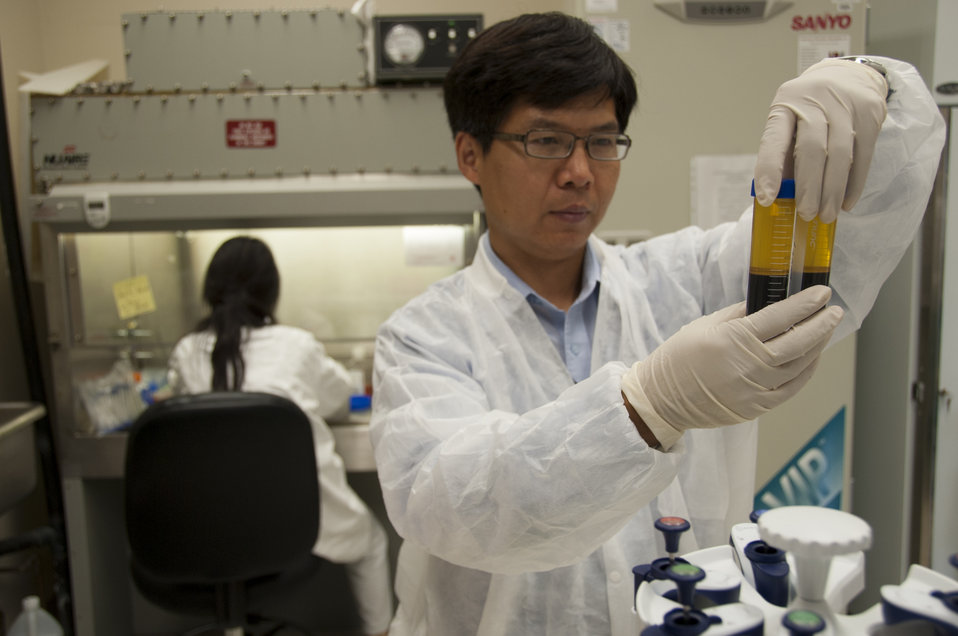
Blood Research: Saving Lives (8487)

Jason Liu, Ph.D., a laboratory chief at FDA’s Office of Blood Research and Review, performs a visual examination of centrifuged whole blood, which was separated into plasma, white blood cells and red blood cells. Meihong Liu, Ph.D., works in the background. FDA is responsible for the safety of our nation’s blood supply and is at the forefront of evaluating and encouraging innovative technologies for protecting it.

Read this Consumer Update to learn more: Advances in Saving Lives with Blood